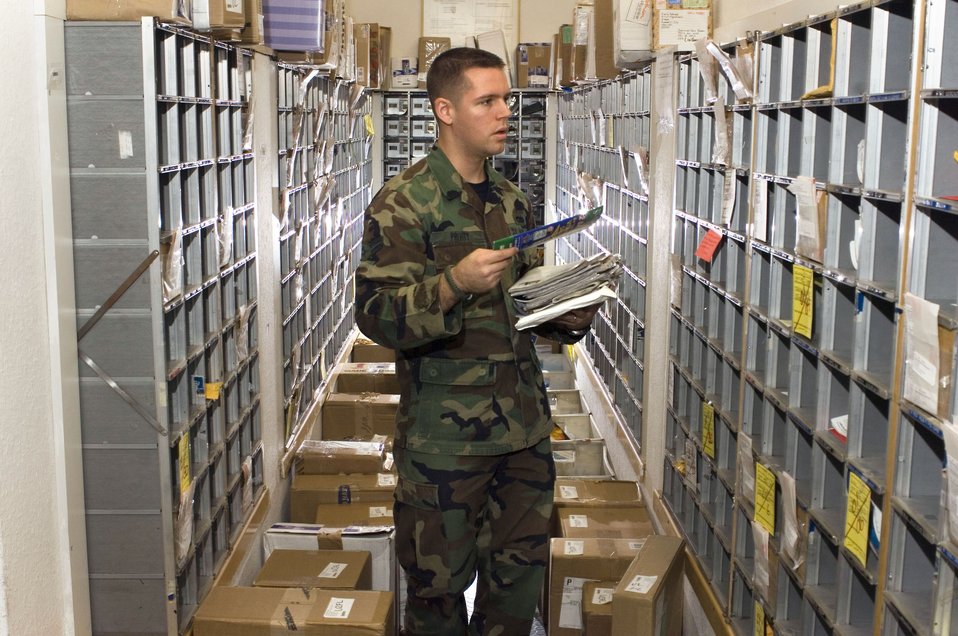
Postal service

RAMSTEIN AIR BASE, Germany (AFPN) -- Airman 1st Class Sean Pruitt puts mail into post office boxes at the North Side Post Office. Although Christmas has past, packages are still arriving here. Airman Pruitt is from Green River, Wyo., and is a postal clerk with the 435th Communication Squadron.